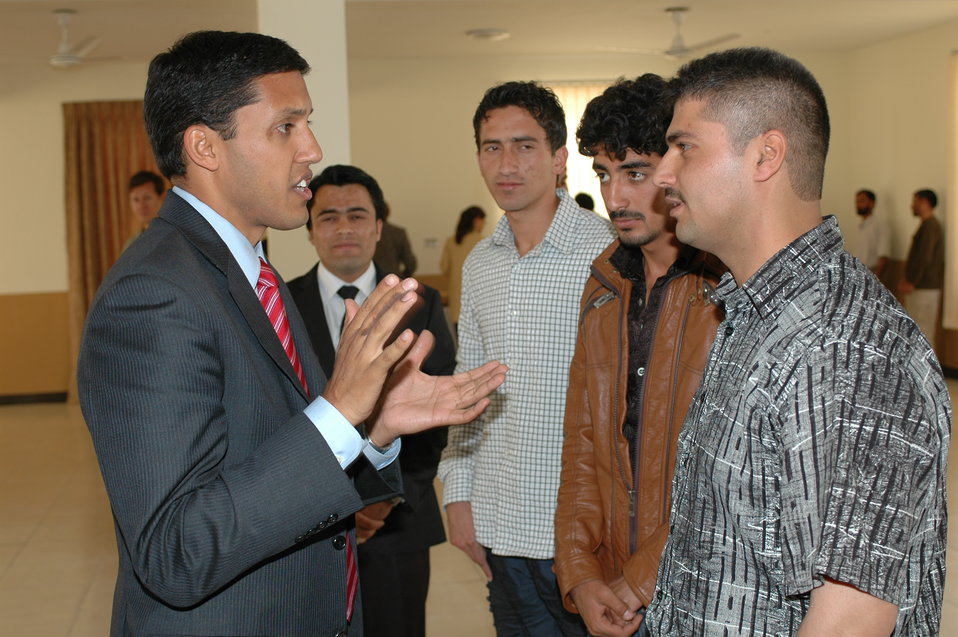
Dr Shah Visits Votech in Kabul